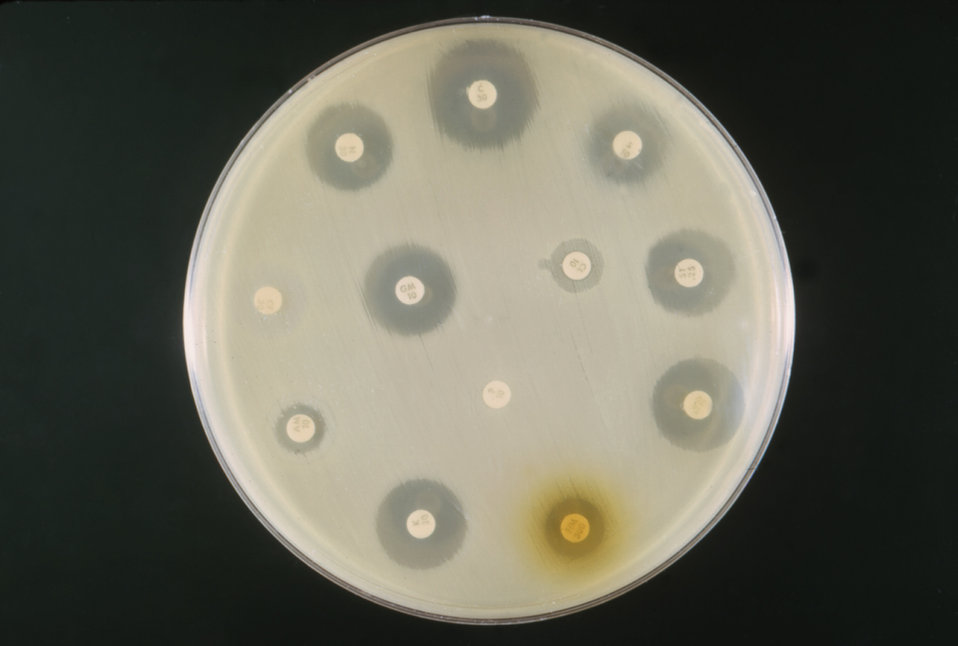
This is an example of an antibiotic sensitivity test on a mixed culture of E. coli and a Proteus sp., at a pH 7.2.